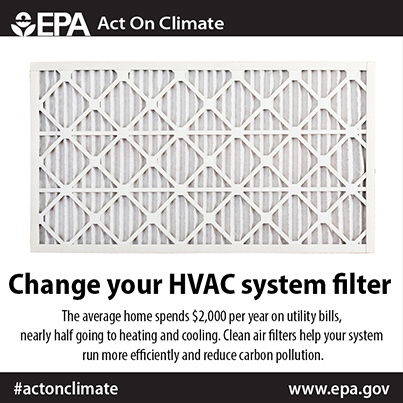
hange your HVAC filter regularly to ensure your system is running efficiently and #ActOnClimate.